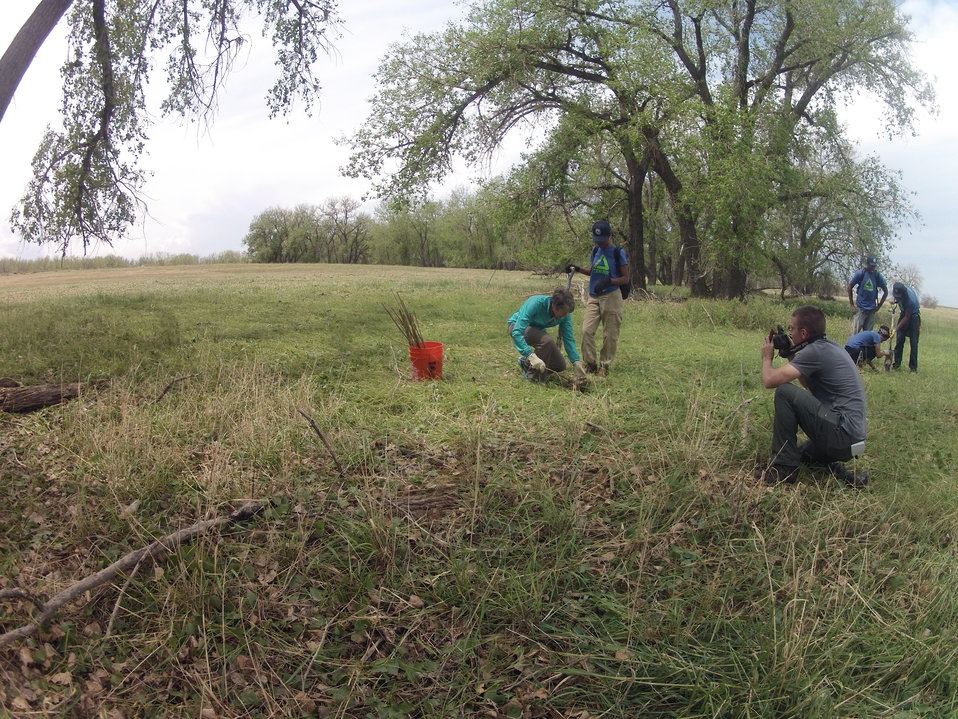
Secretary Jewell Announces $6.7 for Youth Conservation Jobs

Interior Secretary Sally Jewell helps local youth conservation groups plant cottonwood trees at Rocky Mountain Arsenal National Wildlife Refuge.